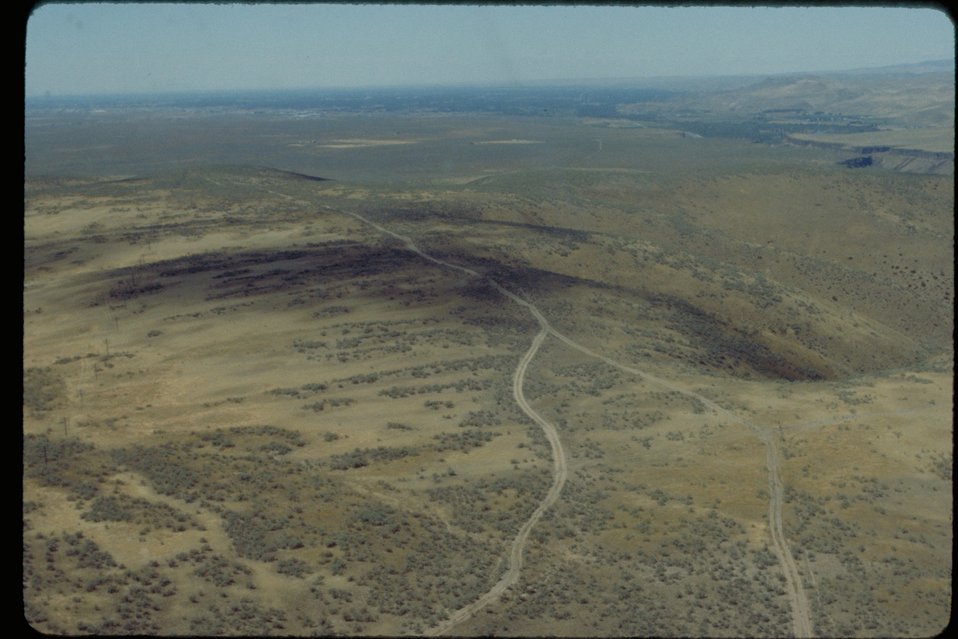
Oregon Trail between Bonneville Point and Boise Lower Snake River District